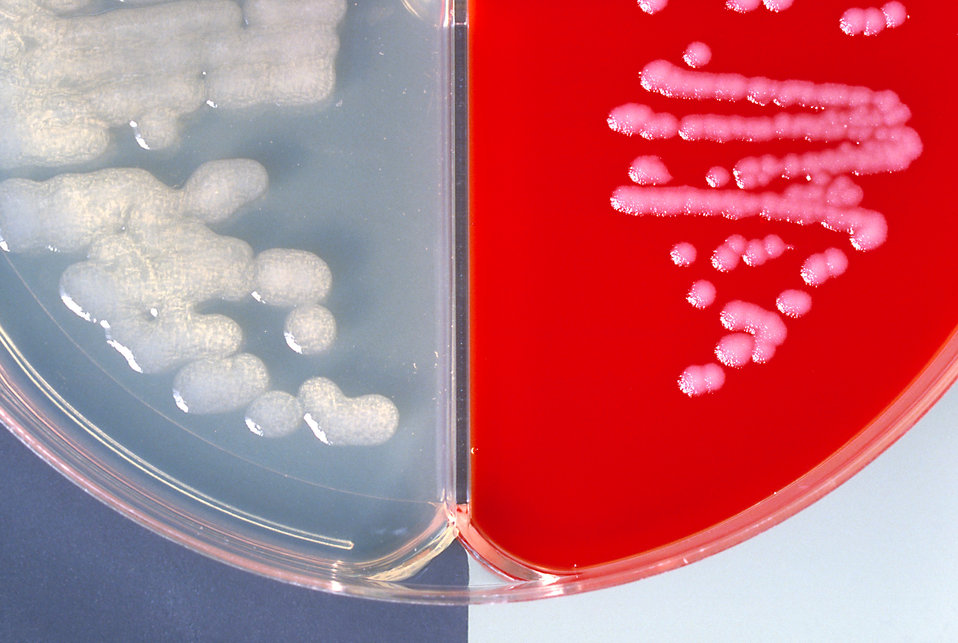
Bicarbonate agar and blood agar plate cultures of Bacillus anthracis.